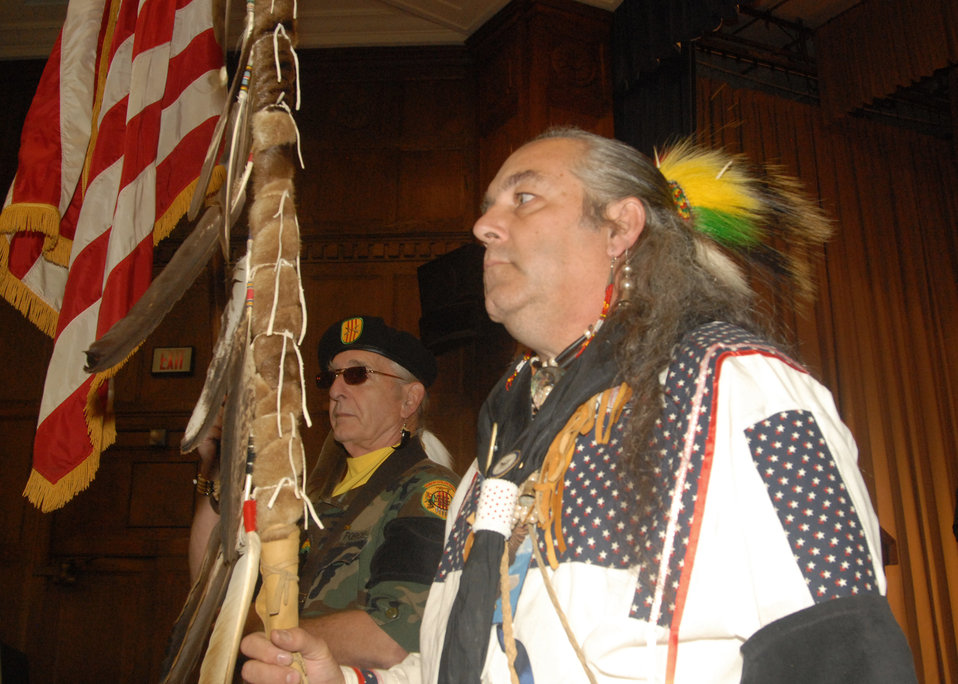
U.S. Air Force, Viet Nam Odawa Nation John Egnew carries the U.S. flag in the Viet Nam Era Veterans Intertribal Association’s (VEVITA) color guard at the U.S. Department of Agriculture’s (USDA) Native American Heritage Month Observance in the Jefferson Auditorium at the USDA South Building in Washington, D.C. on Tuesday, Nov. 20, 2012. The theme for this year’s observance is “Serving with Honor, Pride, and Devotion: Country, Land and People”.